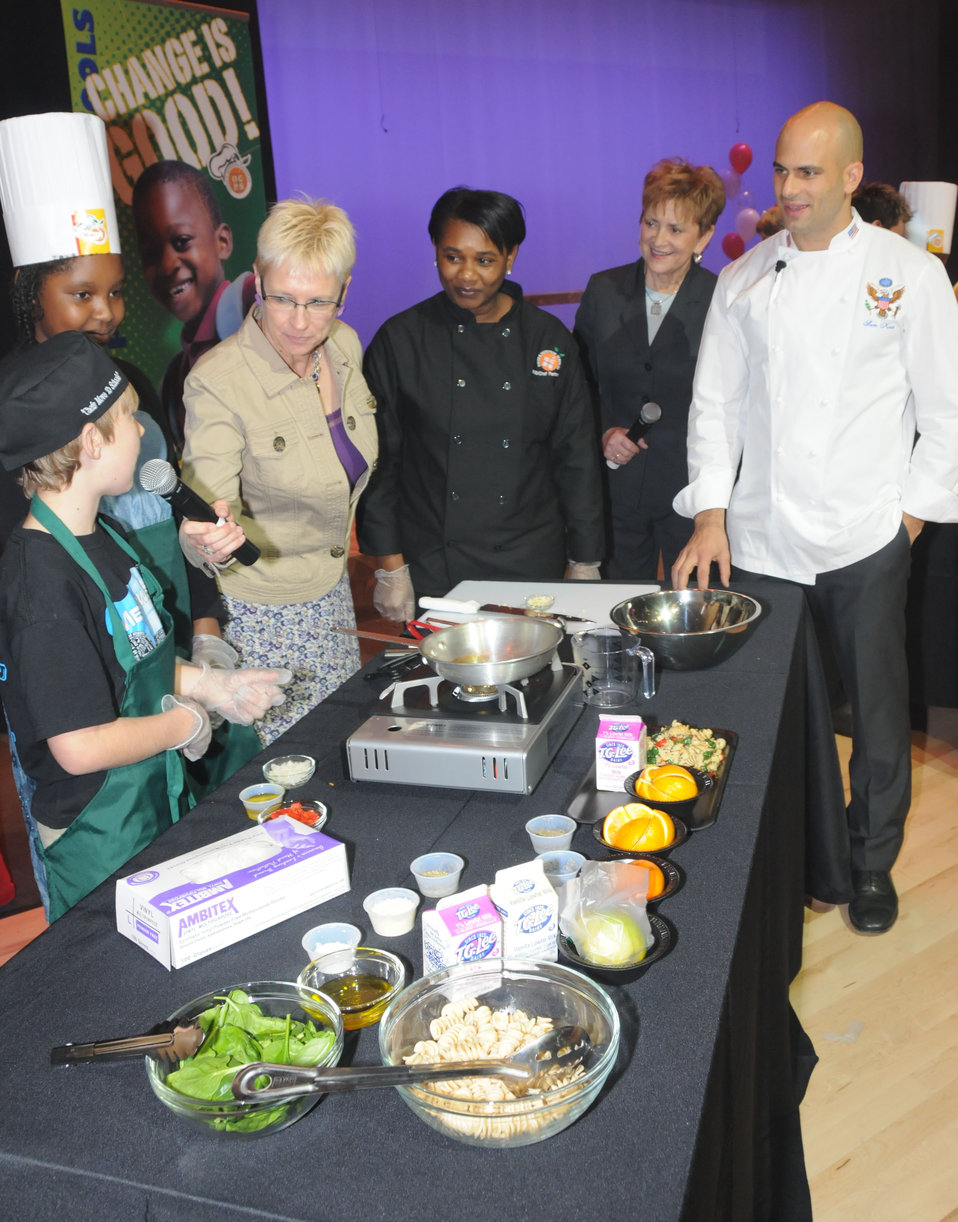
FL CMTS Event - Jan 28, 2011 WH Chef, DUS

Sam Kass, White House Assistant Chef and Senior White House Policy Adviser for Healthy Food Initiatives (far right), and Dr. Janey Thornton, USDA Deputy Under Secretary for the Food, Nutrition and Consumer Services (right), watch as Metrowest Elementary School chef students show off their recipes.